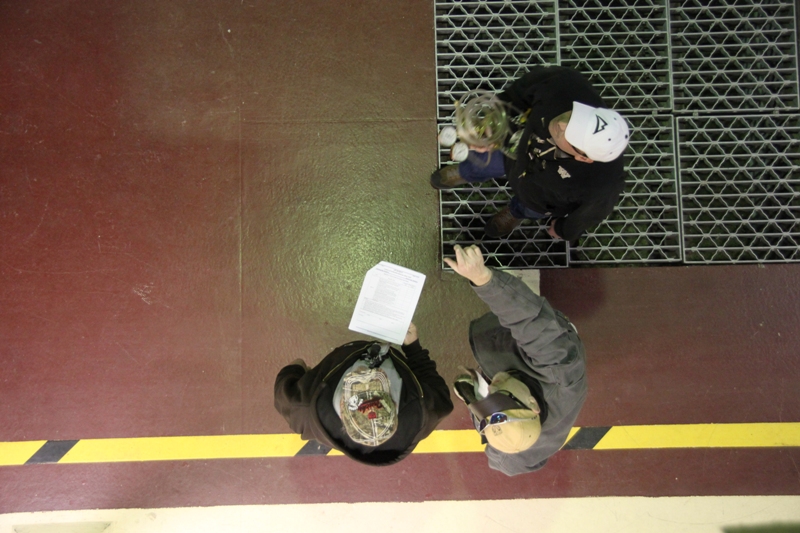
Stimulus jobs build skill sets, confidence

A worker and trainers walk through a work package to prepare for upcoming work at a Hanford facility. Each work task at the Hanford Site is different, so on-the-job, facility specific training is one of several stages of training Hanford workers receive before beginning work at the site.